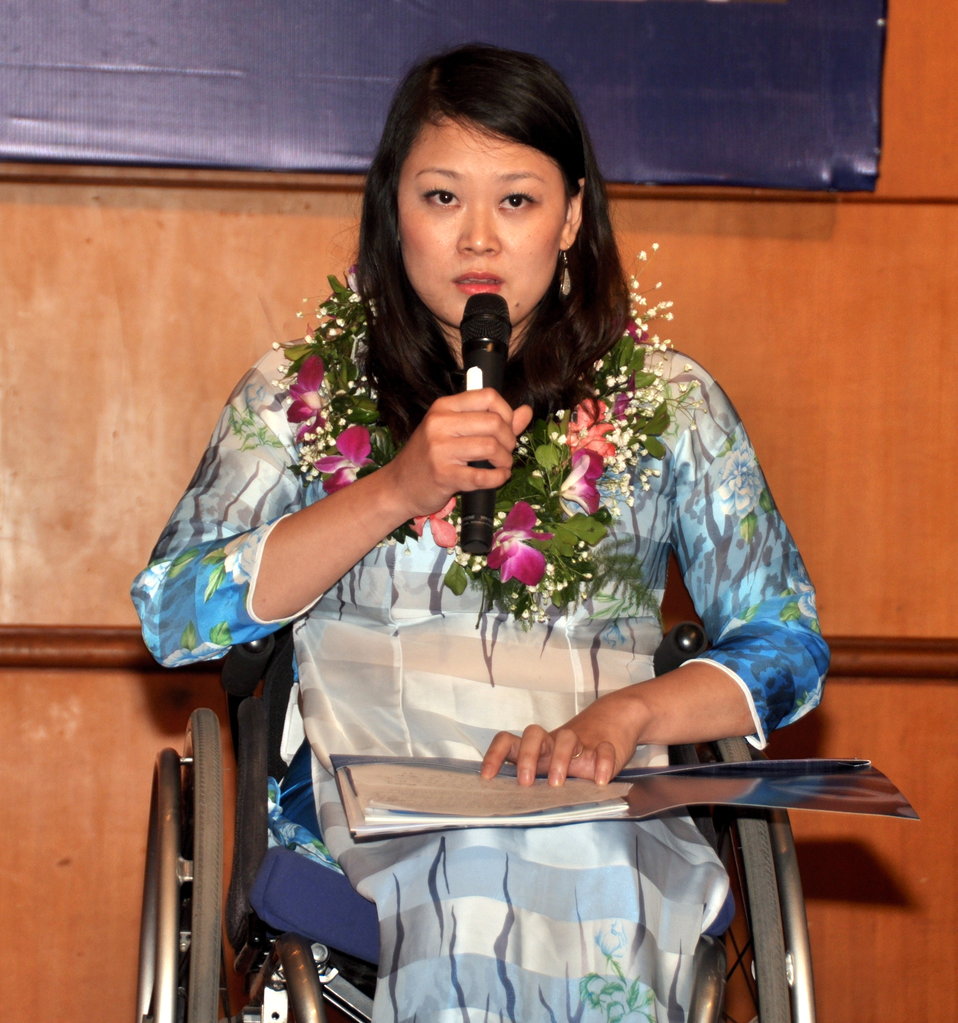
Blue Ribbon Employer Council Awards for Hiring Vietnamese with Disabilities

Hanoi, April 17, 2013